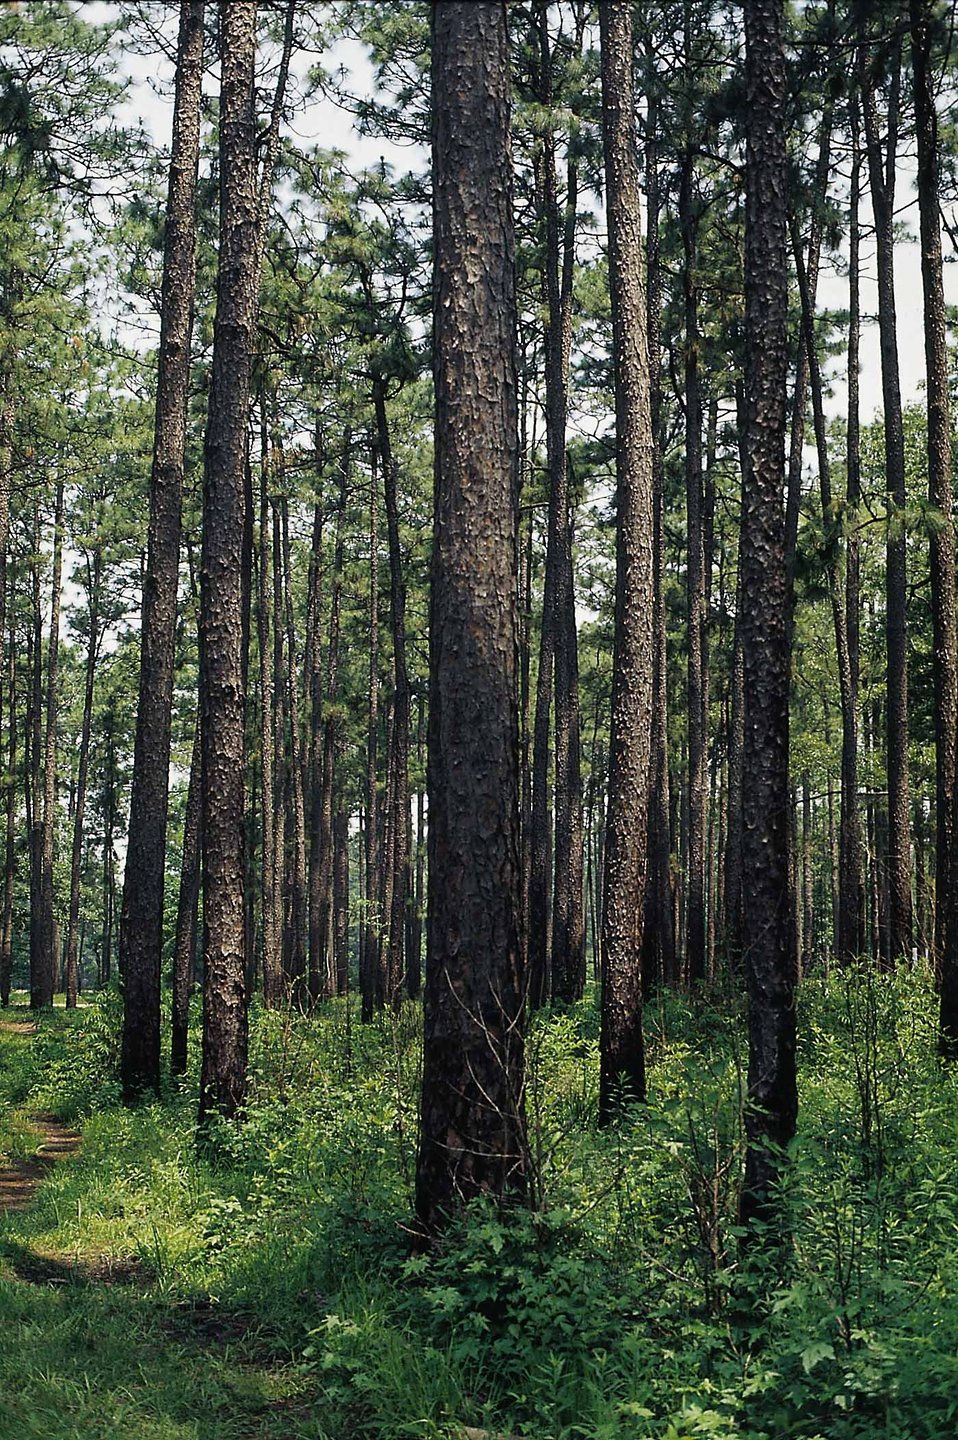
Well-managed woodland in South Carolina.